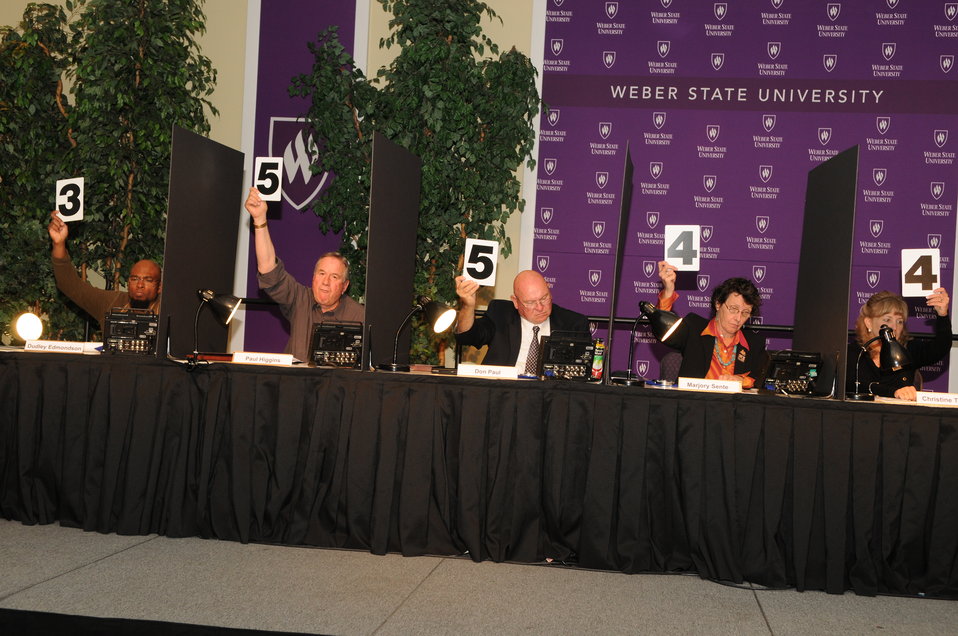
Judging

The U.S. Fish & Wildlife Service sponsored the 2012 Federal Duck Stamp Art Contest September 28 and 29 in Ogden, Utah, at Weber State University. A panel of five judges was responsible for choosing the art work used to design the 2013-2014 Migratory Bird Hunting and Conservation Stamp.